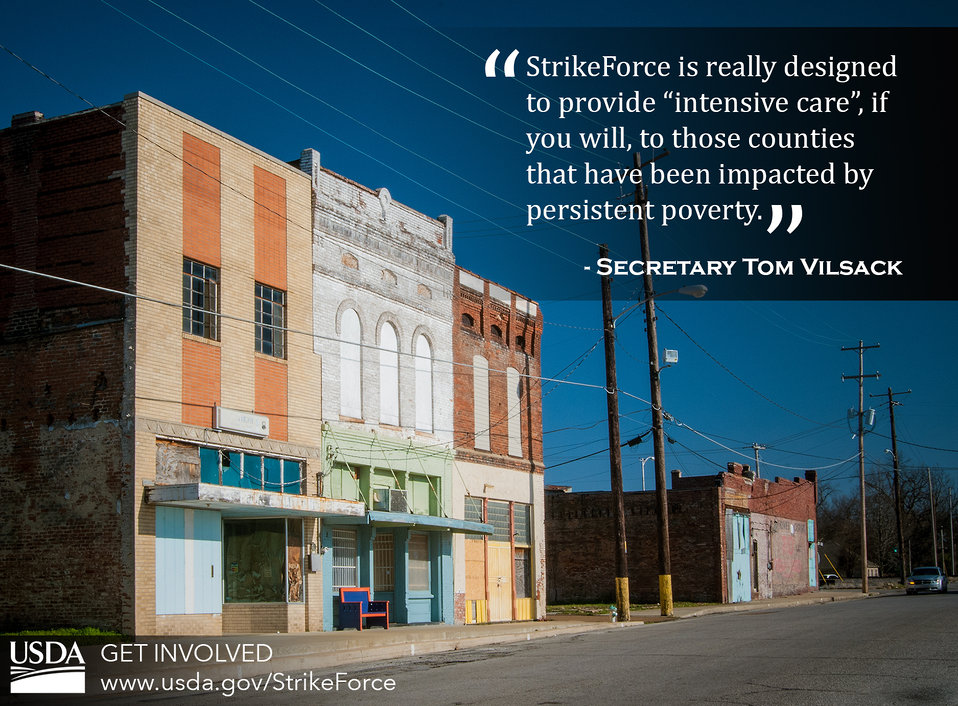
'StrikeForce is really designed to provide 'intensive care', if you will, to those counties that have been impacted by persistent poverty' -Secretary Tom Vilsack.